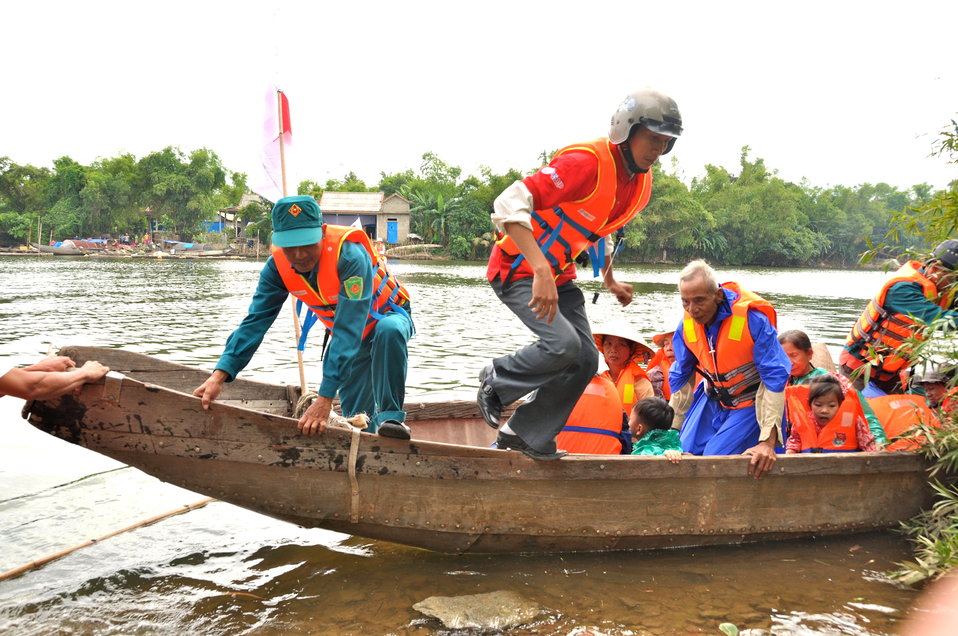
USAID and Save the Children support community evacuation drill and emergency preparedness in central Vietnam

Loc An Commune, Phu Loc District, Thua Thien Hue Province
December 4, 2012, Photo: Richard Nyberg, @USAIDVietnam